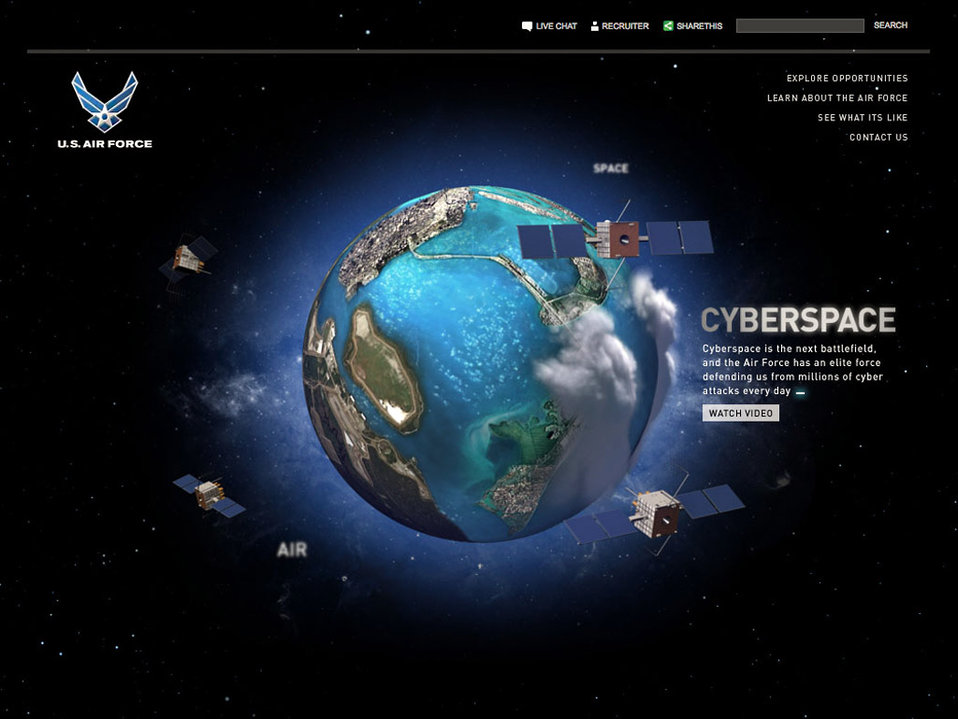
Air Force recruiting Web site redesign launched

Incorporating the latest Internet technologies while reflecting the way ahead for the service, Air Force Recruiting Service officials launched their redesigned Web site Dec. 15 at airforce.com.